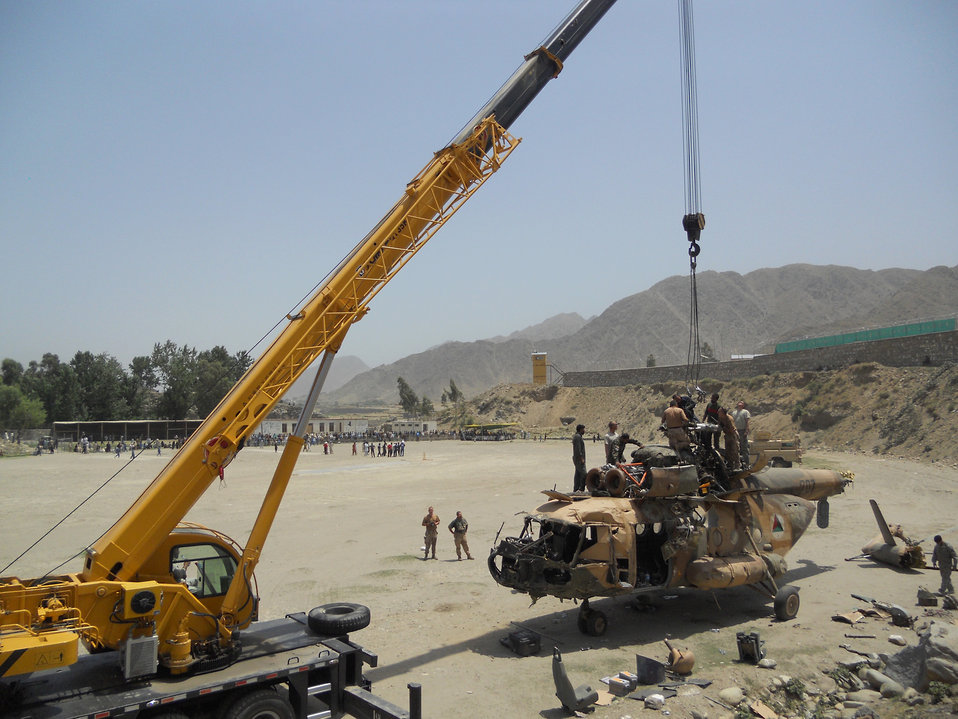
AAF Mi 17 crash

With support from Task Force Bronco 4, teams removed portions of a Mi-17 helicopter after a crash in Kunar province. Thirteen members of the 438th Air Expeditionary Wing responded to the incident scene. There were six people on board the aircraft when it crashed and officials indicate there were no life-threatening injuries. Airmen were on scene of the crash for more than a week.